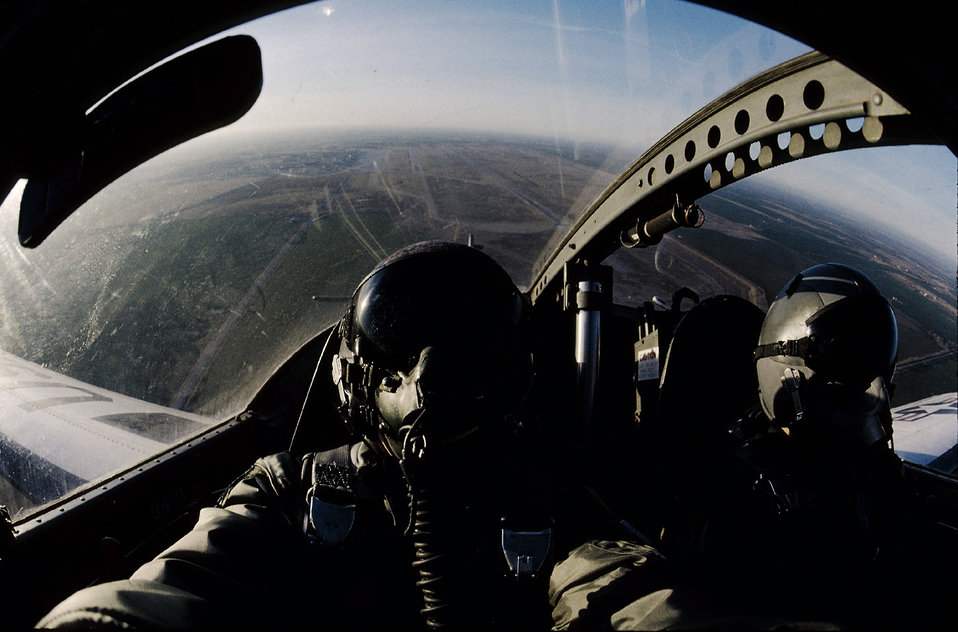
Level flight?

VANCE AIR FORCE BASE, Okla. -- Capt. Michael Brazelton (right) shows Tech. Sgt. Lance Cheung that the T-37 Tweet is capable of more than straight and level flight. Cheung documented the flight experience for